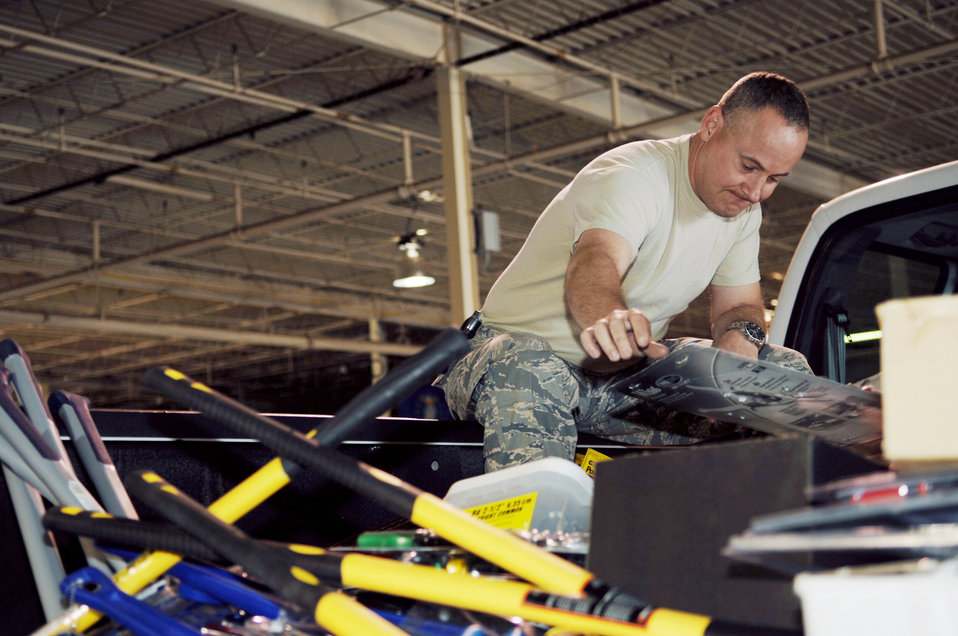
Team heads to Chile for air show, but not empty-handed

Master Sgt. Michael Means arranges tools for a relief package that was sent to Chile March 16, 2010, at Holloman Air Force Base, N.M. More than $13,000 was spent in the local community at local hardware stores purchasing the equipment. Sergeant Means is the 49th Civil Engineer Squadron heavy superintendent.